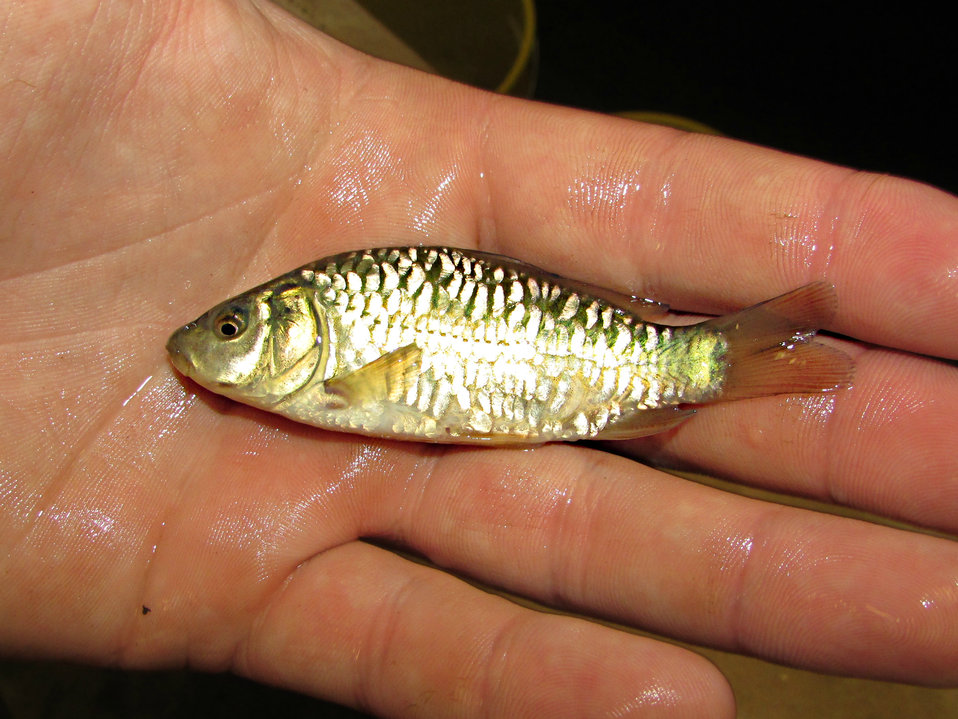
Mirror Carp

Although considered an invasive species, these fish are very rare in South Dakota. Mirror carp come from a genetic mutation in common carp, giving them their unique scale patterns. It's believed they were bred by monks in the 1300s because of their lack of scales, making them easier to clean for cooking.

This mirror carp was captured today at the hatchery and now can be seen in the aquarium!